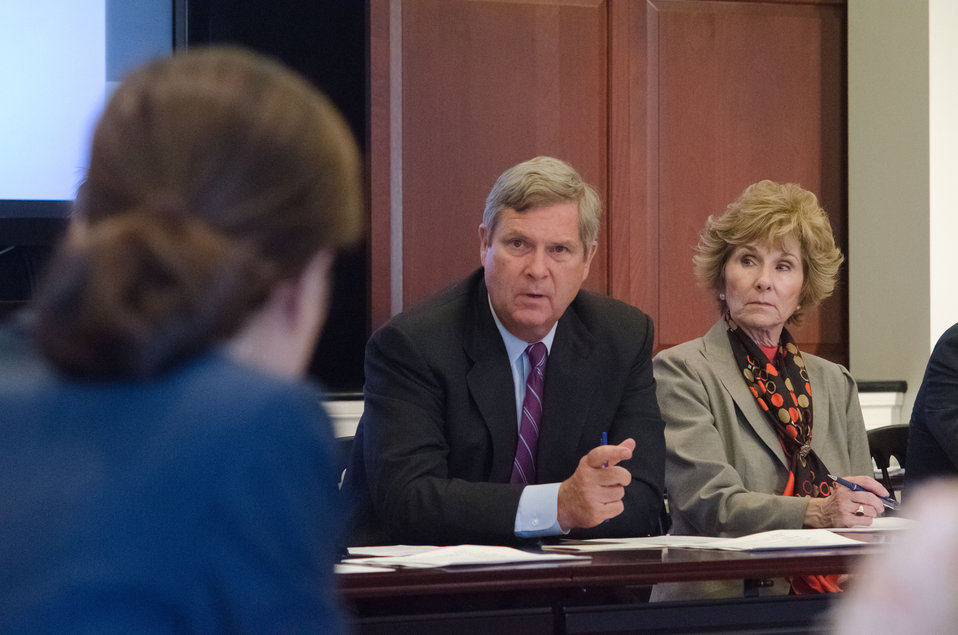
U.S. Small Business Administration Office of the Administrator Senior Policy Advisor Jessica A. Milano discuss ways to promote small business with Agriculture Secretary Tom Vilsack (center) during the White House Rural Council at the White House, in Washington, D.C. on Friday, Oct. 5, 2012. The White House Rural Council discusses recent White House announcements and Secretary Vilsack asked council members to outline their work plan for the coming months.